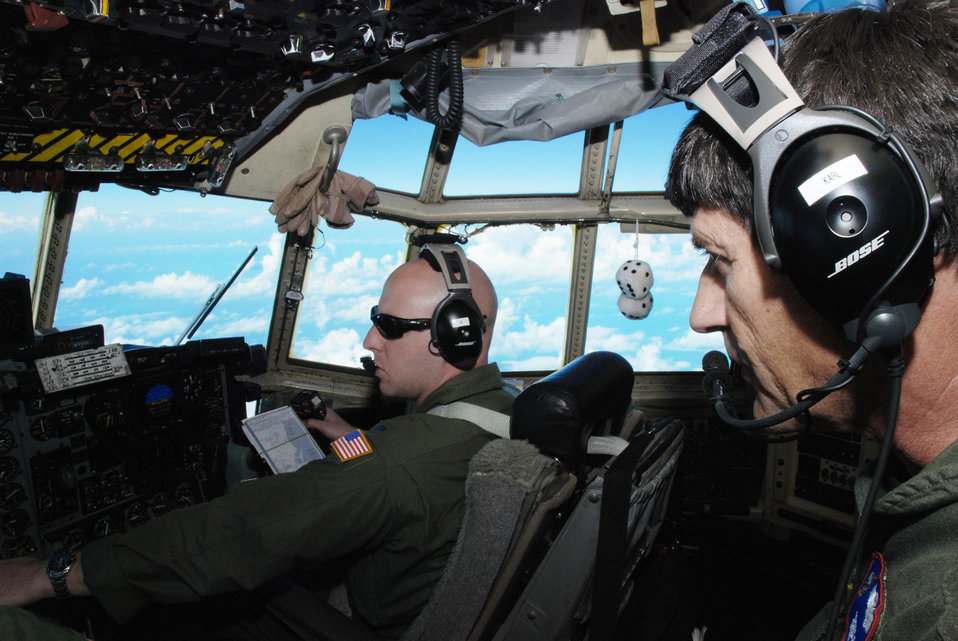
Coronet Oak aircrews respond to Haiti earthquake

Senior Master Sgt. Dennis Karl, a C-130 Hercules flight engineer, and 1st Lt.Casey Fallon, a C-130 co-pilot, were serving on their scheduled Coronet Oak rotation with the 35th Expeditionary Airlift Squadron at Muniz Air National Guard Base, Puerto Rico, when an alert was issued after the earthquake in Haiti. Both Airmen are Guardsmen with the 179th Airlift Wing at Mansfield, Ohio. Their Jan. 22 flight was their sixth mission in support of Operation Unified Response.